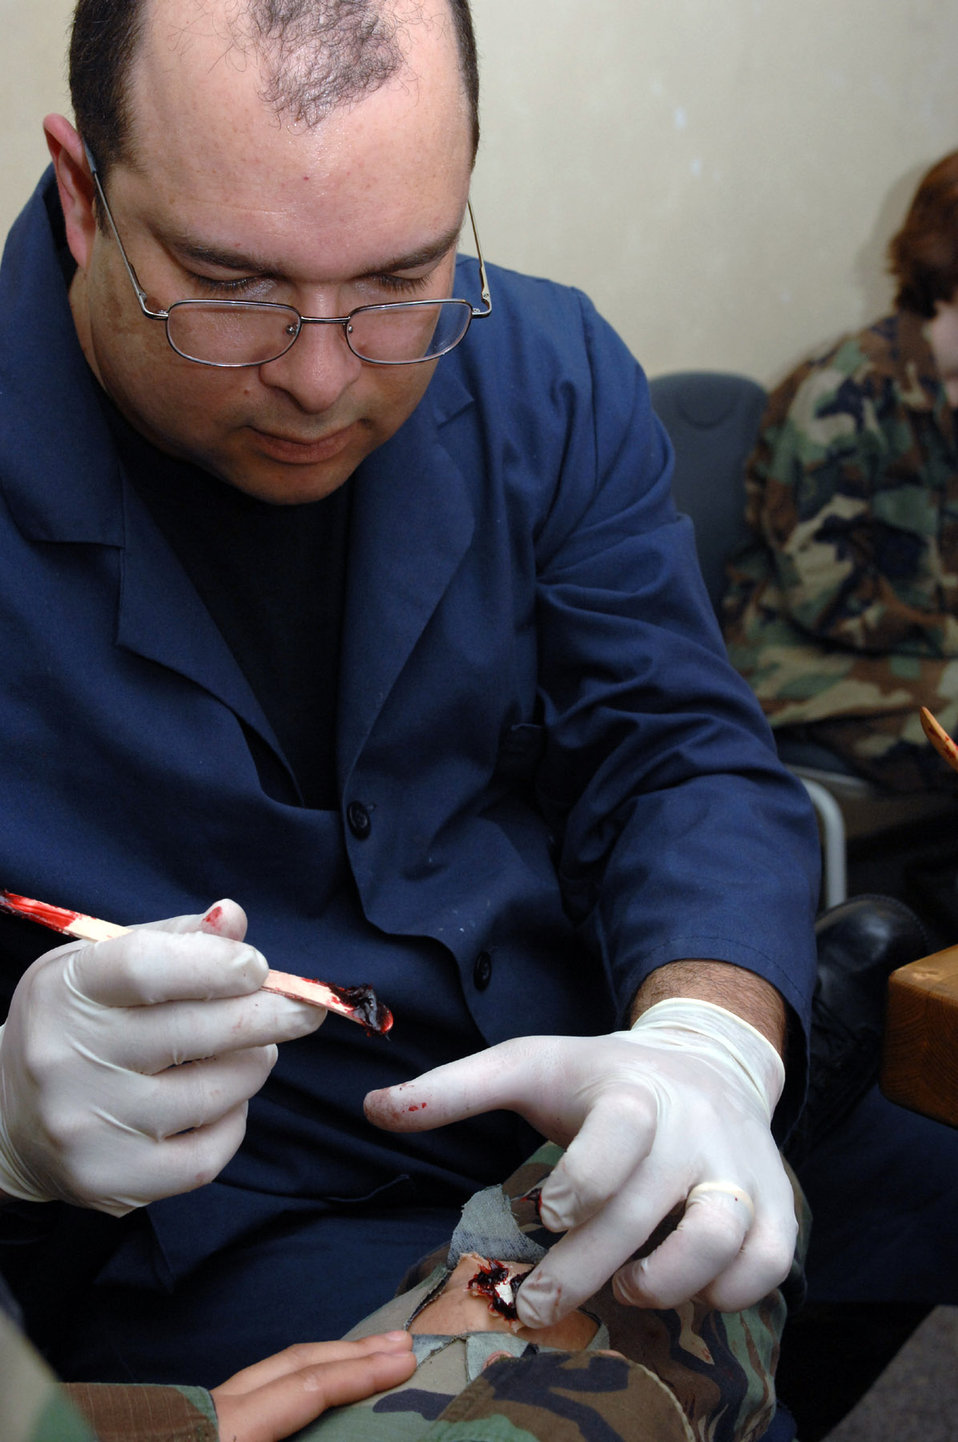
Blood, guts and moulage

Tech. Sgt. Stephen Dereis applies an open wound moulage April 22 during Exercise Saber Crown 08-06 at Spangdahlem Air Base, Germany. The moulage helps make crises exercises more realistic. Sergeant Dereis is with the 52nd Dental Squadron.